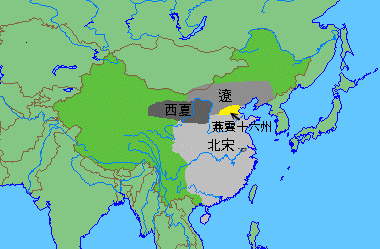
The Song Dynasty, Liao Dynasty, and Western Xia Dynasty of China in the Middle Ages.